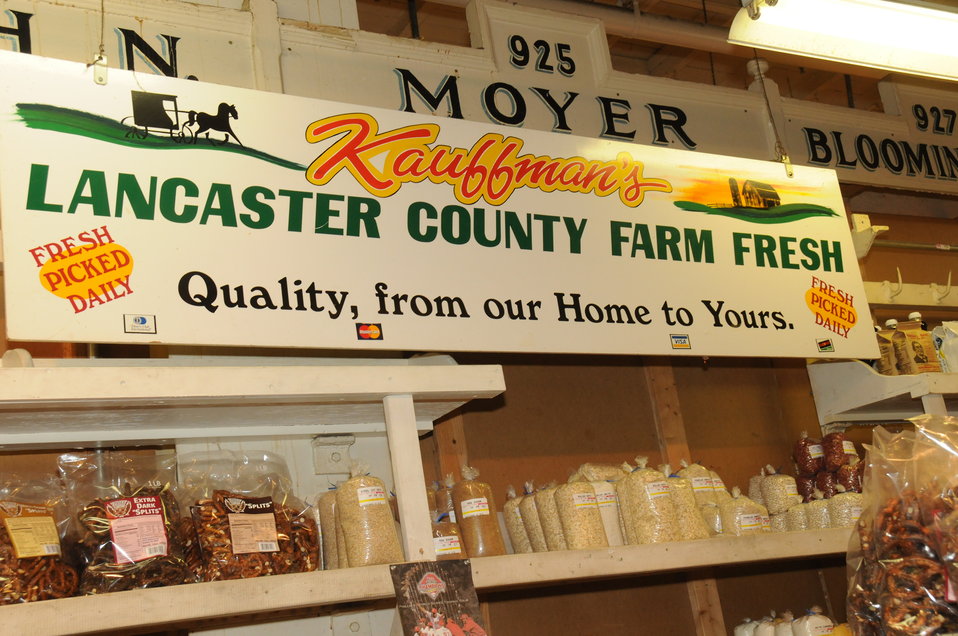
The Reading Terminal Market offers produce fresh from the field to the people of Philadelphia, PA on April 3, 2009. There are Amish specialties, fruits, vegetables, meats, seafood, and poultry. Reading Terminal Market opened for business in 1892 with approximately 78,000 square feet and almost 800 spaces for vendors. The Market was revitalized in the 1990’s and today is still the gastronomic bazaar that its original planners had envisioned. Many of the historic Market stands survived the reconstruction and are once again filled with local produce, fresh eggs, milk, meats, poultry, seafood, handmade crafts, jewelry, and clothing. The Market is home to more than 80 merchants, two of whom are descendants of the original stand holders from a century before.